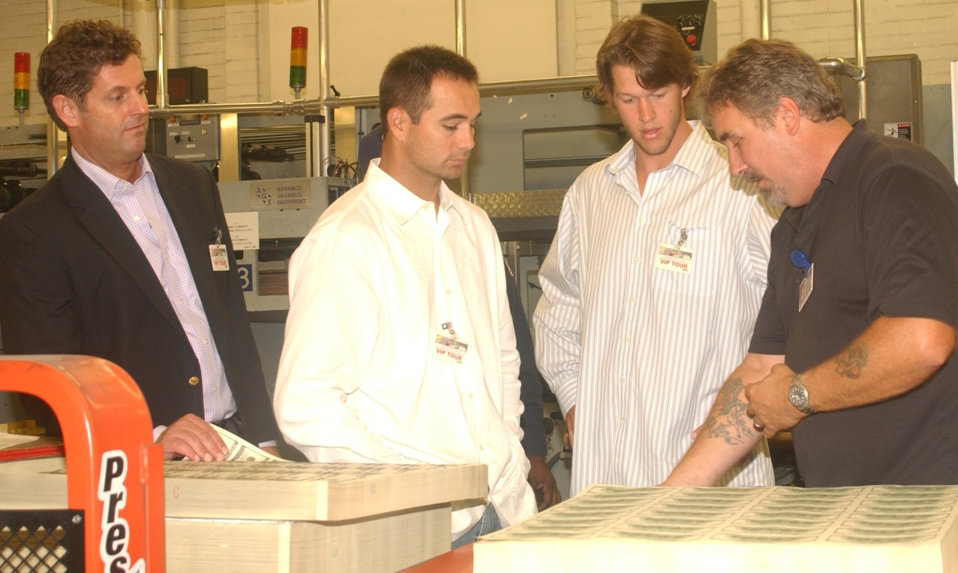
LA Dodgers Visit the Bureau of Engraving and Printing

Ted Lilly (middle left) and Clayton Kershaw (middle right) of the L.A. Dodgers see a demonstration on the currency production process at the Bureau of Engraving and Printing in Washington, D.C.